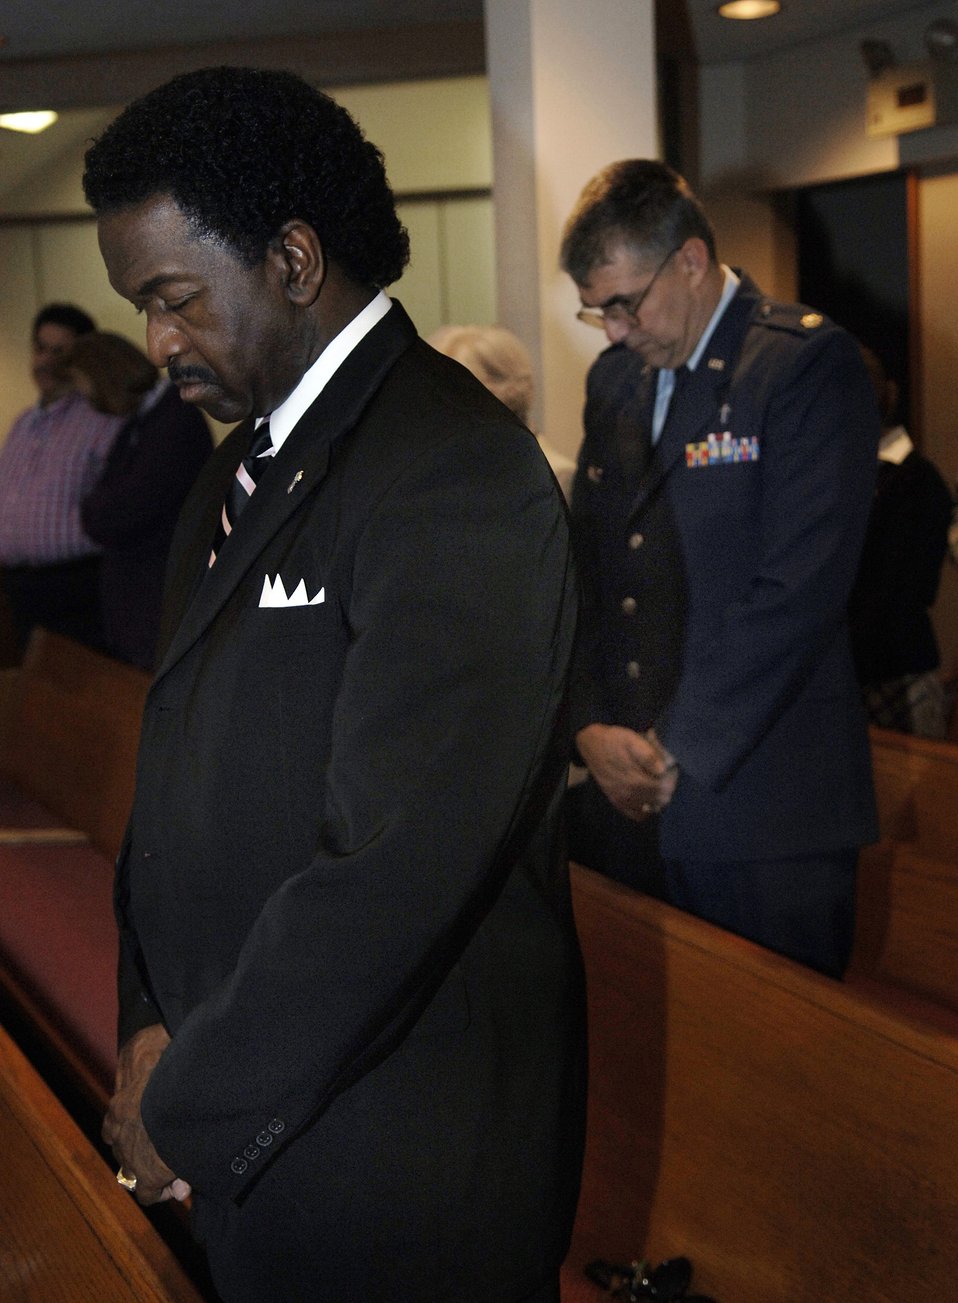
Honoring Martin Luther King Jr.

LACKLAND AIR FORCE BASE, Texas (AFPN) -- Eugene Turner (left) and Maj. Robert Wido pray during the Dr. Martin Luther King, Jr. 2006 Commemorative Service at the Freedom Chapel here. Mr. Turner is the base's human resource training officer and Major Wido is the 37th Training Wing's deputy wing chaplain.